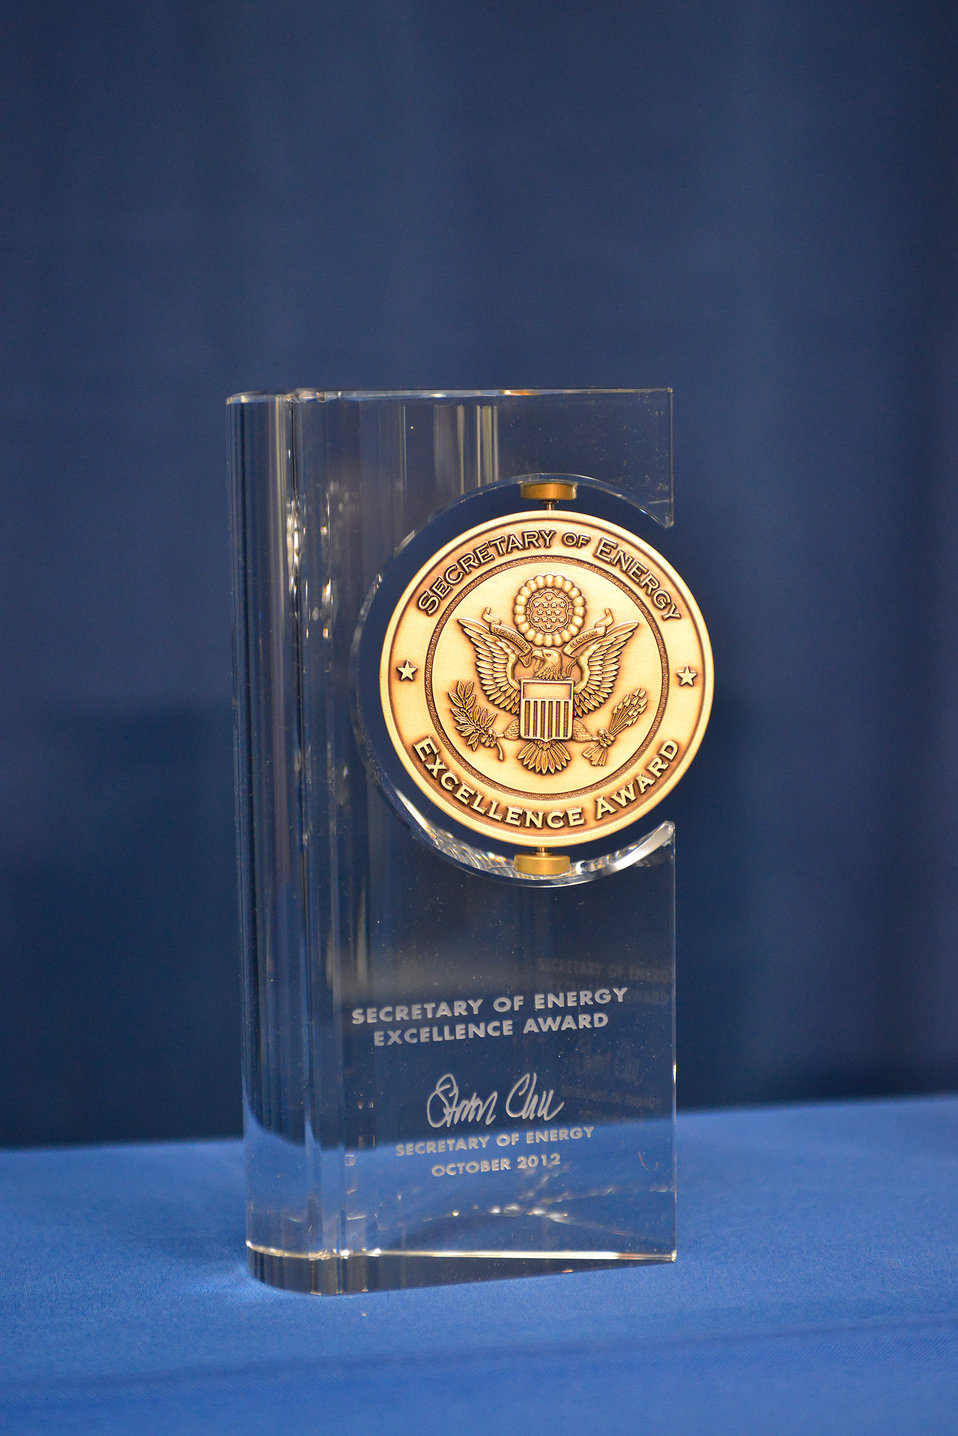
Excellence Award

This award is bestowed upon individuals who have a singular accomplishment that demonstrates a high level of performance and outstanding leadership in public service. The individual’s overall achievement must be substantial, outside the normal course of duty, and significantly benefit the Department’s mission and the Nation.